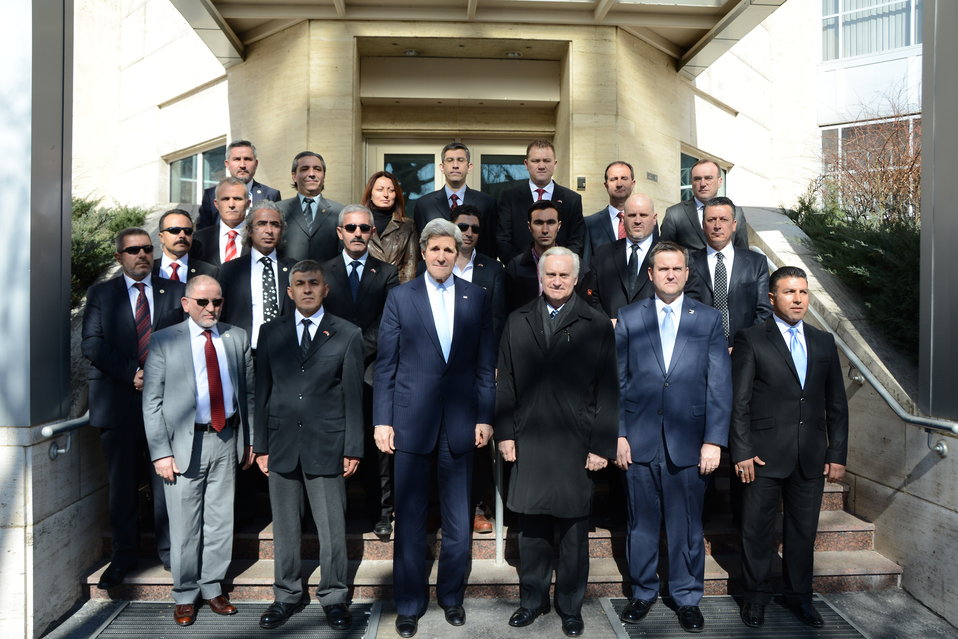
Secretary Kerry With Embassy Guards

U.S. Secretary of State John Kerry poses for a photo with Embassy guards at a Memorial Ceremony in honor of Embassy guard Mustafa Akarsu at the U.S. Embassy in Ankara, Turkey, on March 1, 2013.